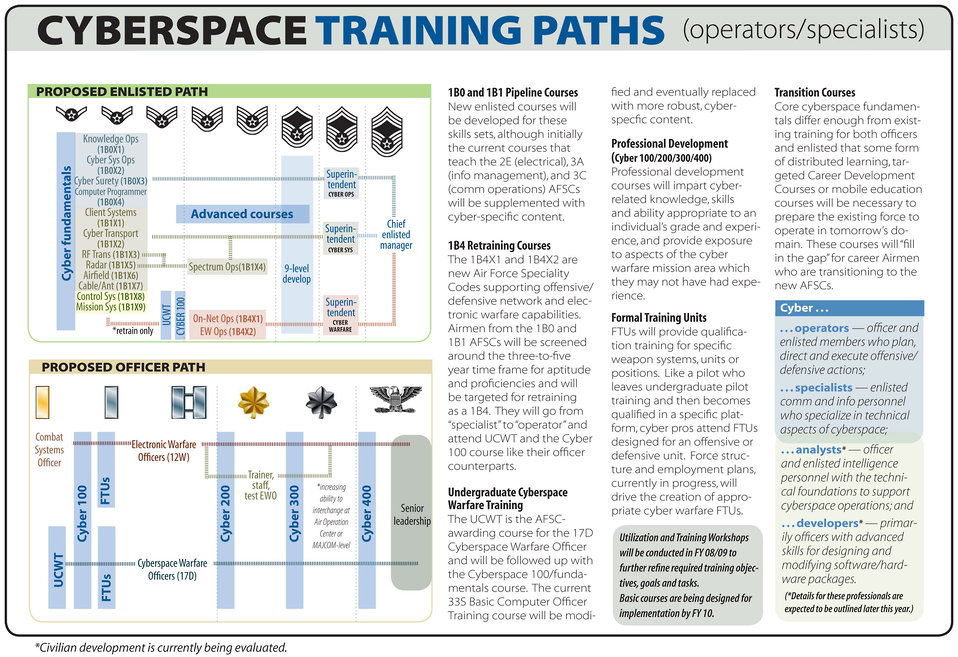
Cyberspace career fields, training paths, badge proposed

The illustration outlines the cyberspace training paths. This chart deals with specialists and operators. The analysts and developers, as well as civilian paths, are under review.